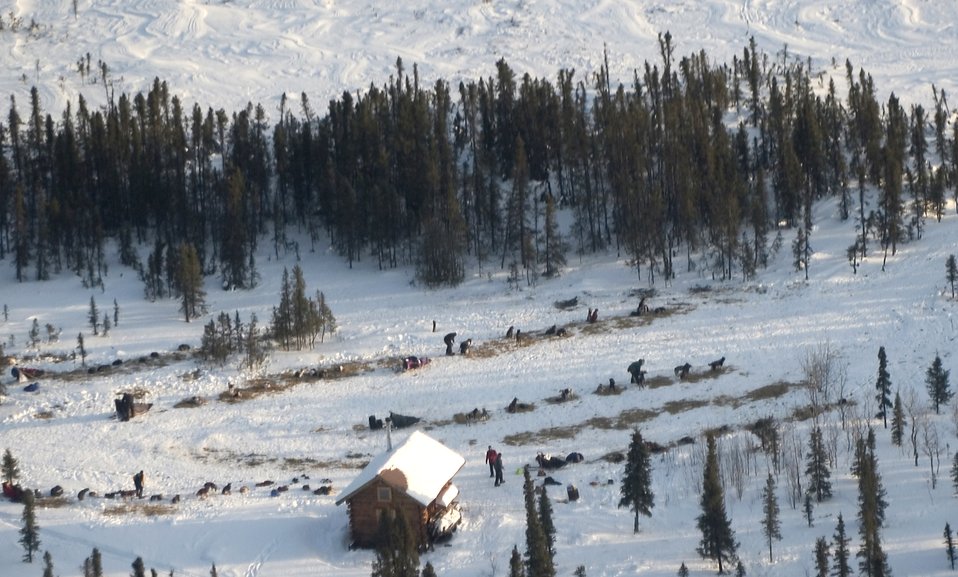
Iditarod 2006

Maj. Tom Knolmayer, along with other mushers, stop at the 'Old Woman's Cabin' along a 90-mile stretch of the Iditarod dog sled race trial between Kaltag and Unalakleet checkpoints. The cabin is approximately 300 miles from the finish line at Nome, Alaska. Major Knolmayer is the chief of surgery at Elmendorf Air Force Base, Alaska's 3rd Medical Group and he is running his second Iditarod in as many years.